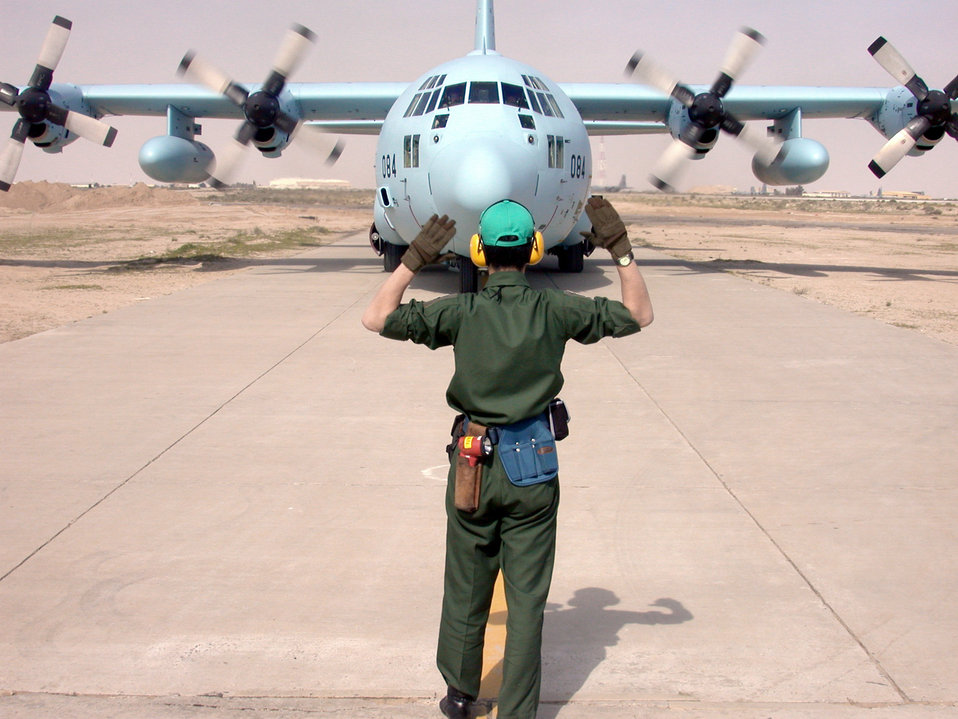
Japanese forces arrive

SOUTHWEST ASIA -- A technician with the Japanese air self-defense forces marshals in the first of three C-130Hs to arrive at a forward-deployed location Jan. 30. The Japanese have not deployed to a hostile location since World War II. They will be working closely with coalition forces to promote humanitarian missions.